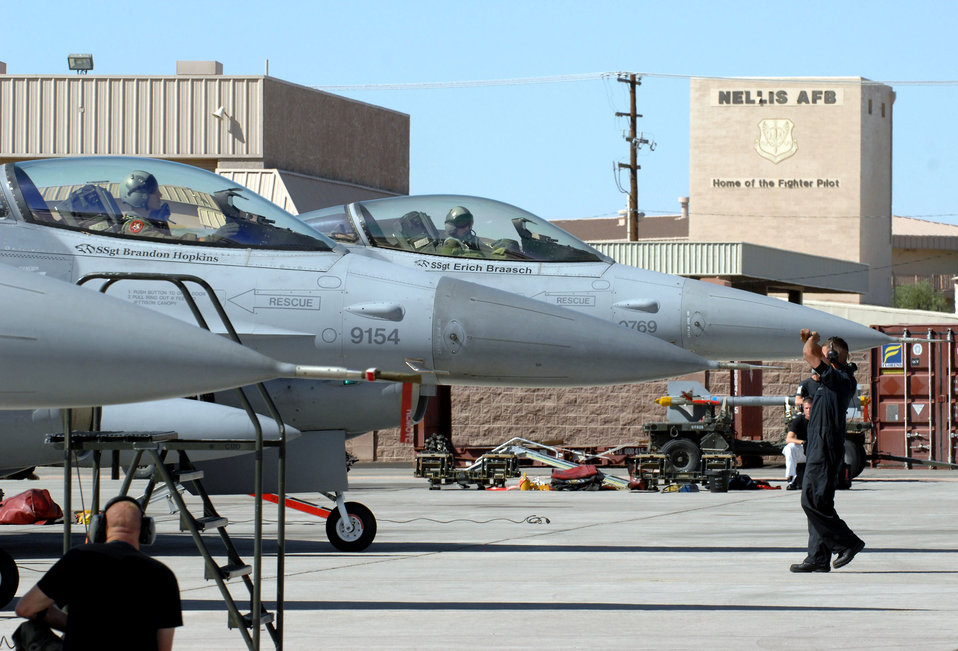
Falcons support Eagle school

Senior Airman Jovany Ruvalcaba marshals in an F-16 Fighting Falcon Oct. 18 at Nellis Air Force Base, Nev. Airman Ruvalcaba is a 63rd Fighter Squadron crew chief from Luke AFB, Ariz. The 63rd FS is at Nellis AFB supporting the F-15 Eagle Weapons School Instructor Course in an adversary tactics role.